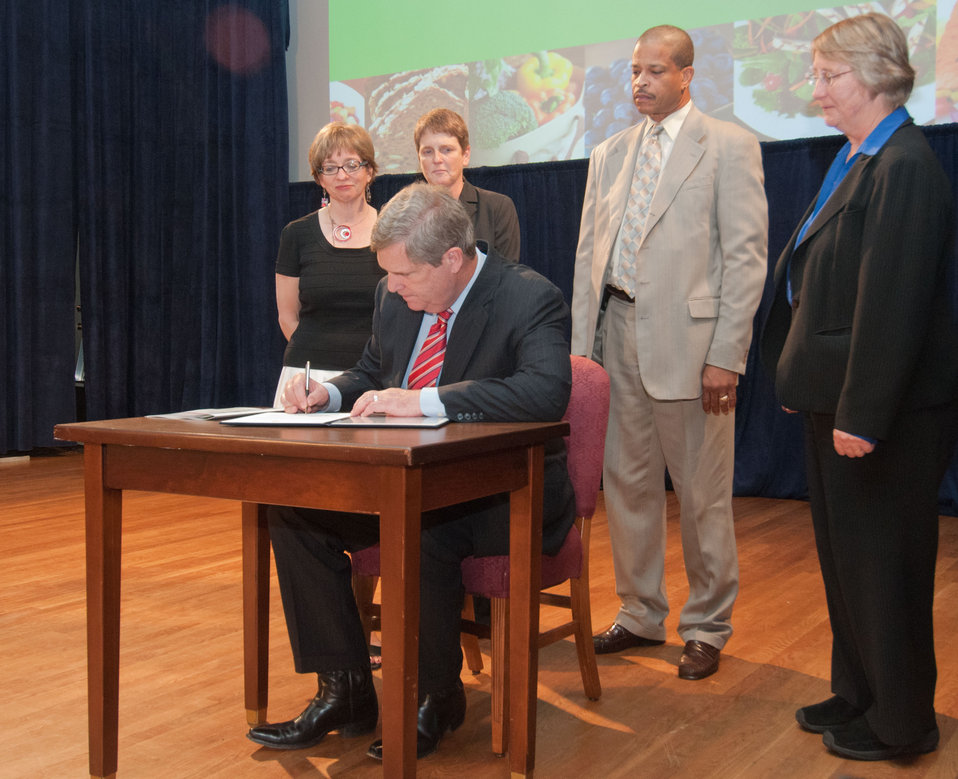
U.S. Department of Agriculture (USDA) Secretary Tom Vilsack made signed the new USDA Civil Rights Policy Statement during the Lesbian, Gay, Bisexual and Transgender (LGBT) Pride Observance Program in the Jefferson Auditorium, Washington, DC on Thursday, June 2, 2011.